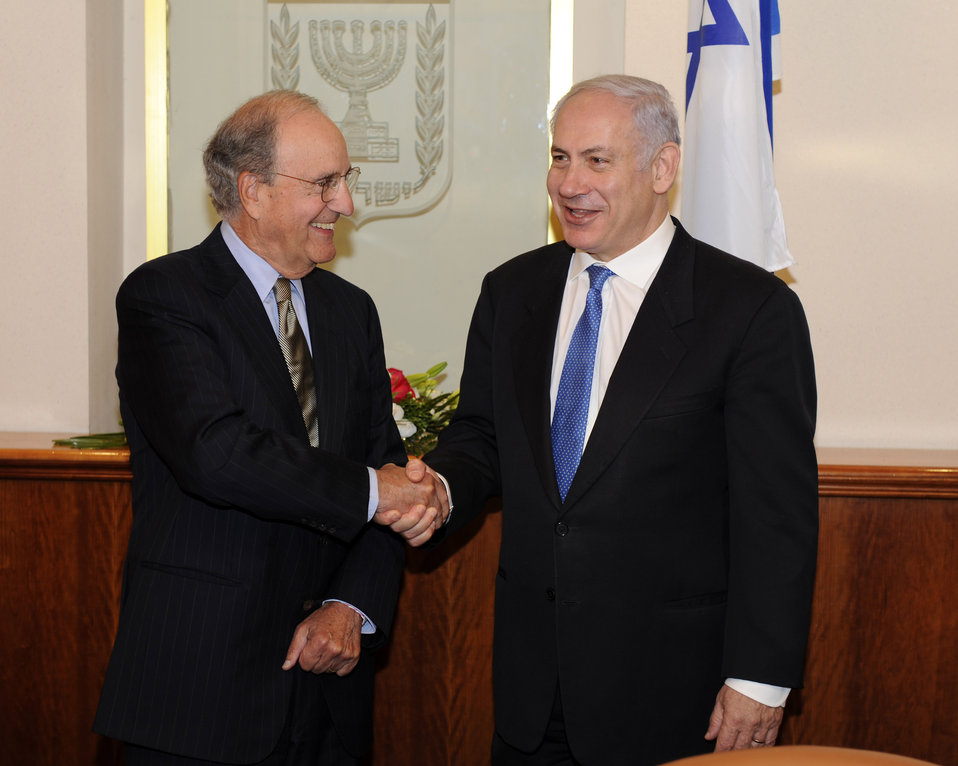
Special Envoy Mitchell Speaks With Israeli Prime Minister NetanyahuSpecial Envoy Mitchell Shakes Hands With Israeli Prime Minister Netanyahu

U.S. Special Envoy for Middle East Peace George Mitchell shakes hands with Israeli Prime Minister Benjamin Netanyahu at the Prime Minister's office in Jerusalem on August 11, 2010.